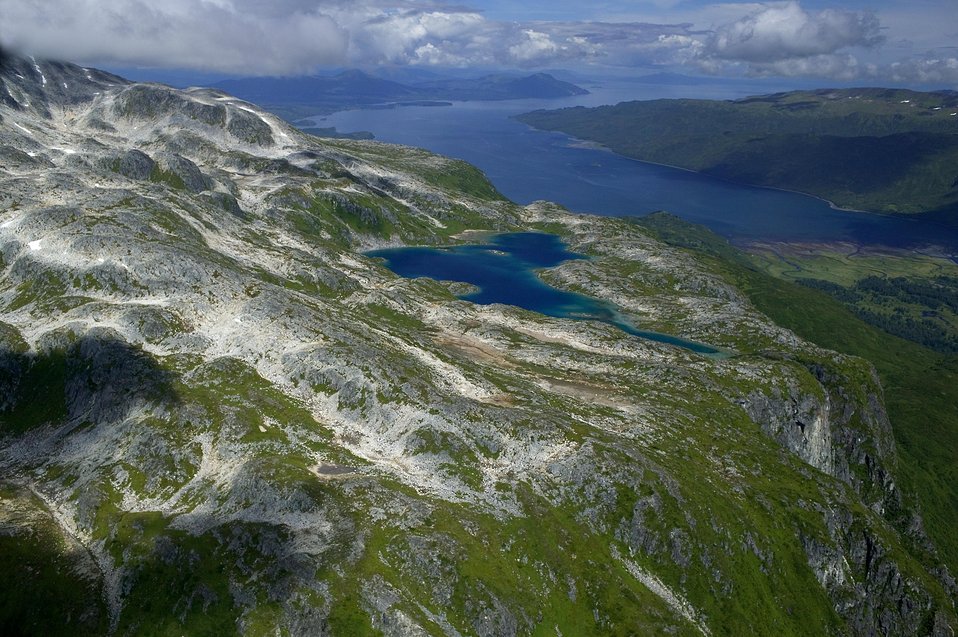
Wildlife of Kodiak Refuge